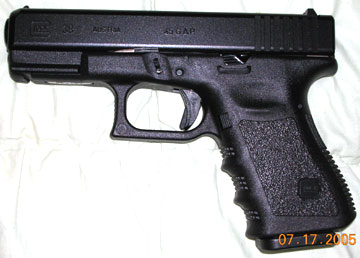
Glock-38 Picture